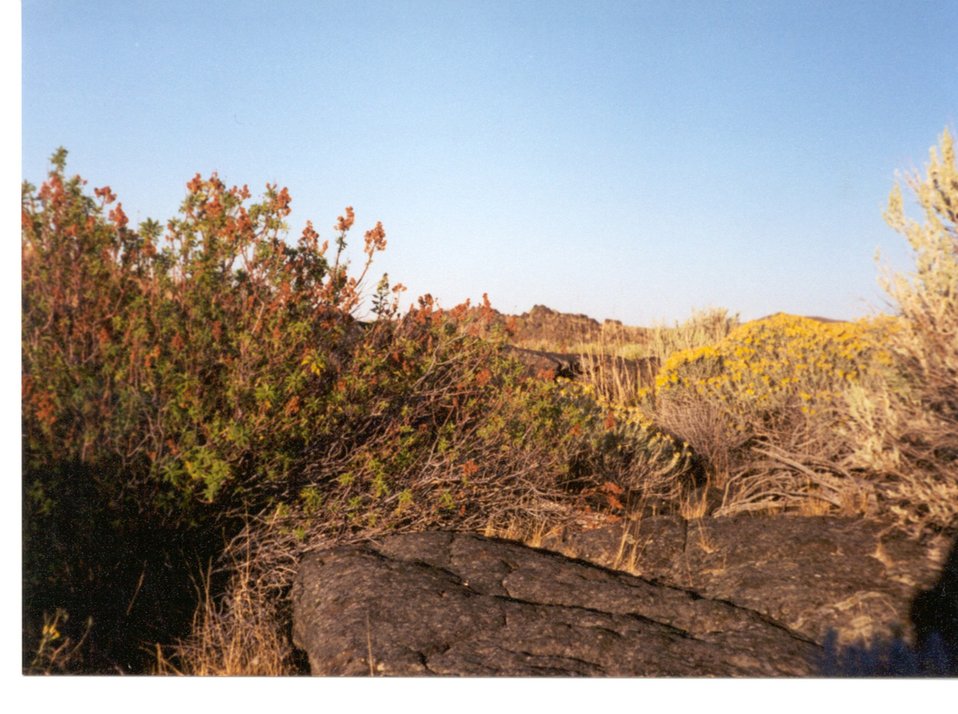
Craters of the Moon Shoshone Field Office USRD Upper Snake River District